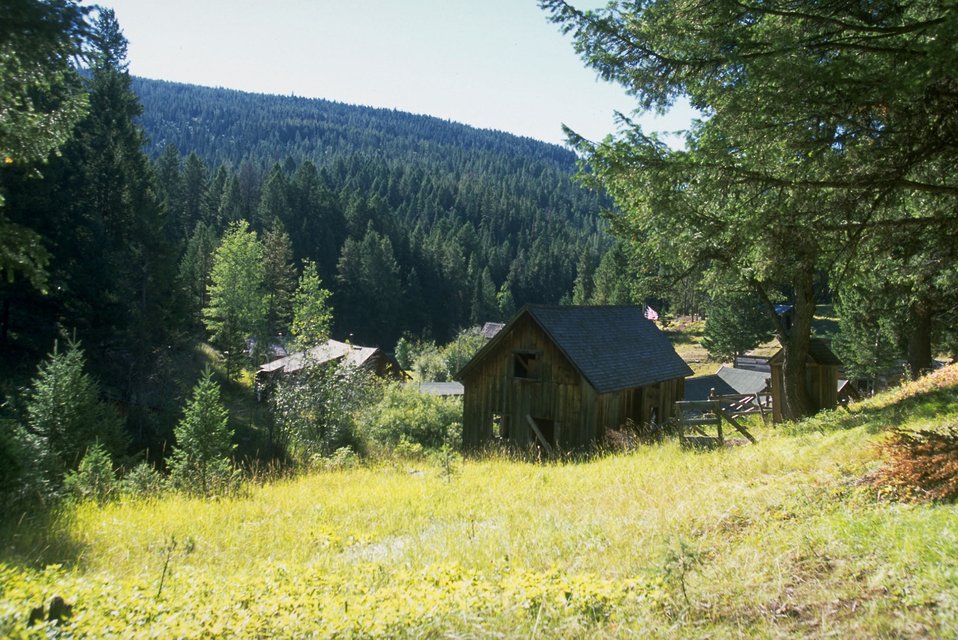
Garnet Ghost Town